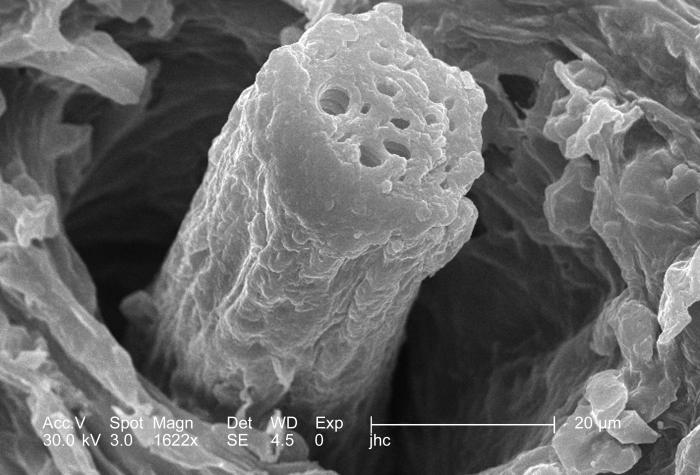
Under a high magnification of 1622x, this 2006 scanning electron micrograph (SEM) depicted details of the morphologic surface characteristics of a "dandelion clock", from a Common Dandelion, Taraxacum officinale plant. The "clock" is the filamentous "puffball" of seeds arranged so as to be easily dispersed by the wind, or the breath of a curious child.In this field of view the remnants of a seed attachment is visible as a small nub protruding from a small papule. It is from these nub-like points that the "parachute"-equipped seeds detach, and are blown away, sometime over a distance of miles. Note that this is the second in a series of PHIL images, 8791-8796, in which the magnification is increased, thereby, providing greater and greater morphologic detail of the point of the developing seed attachment.